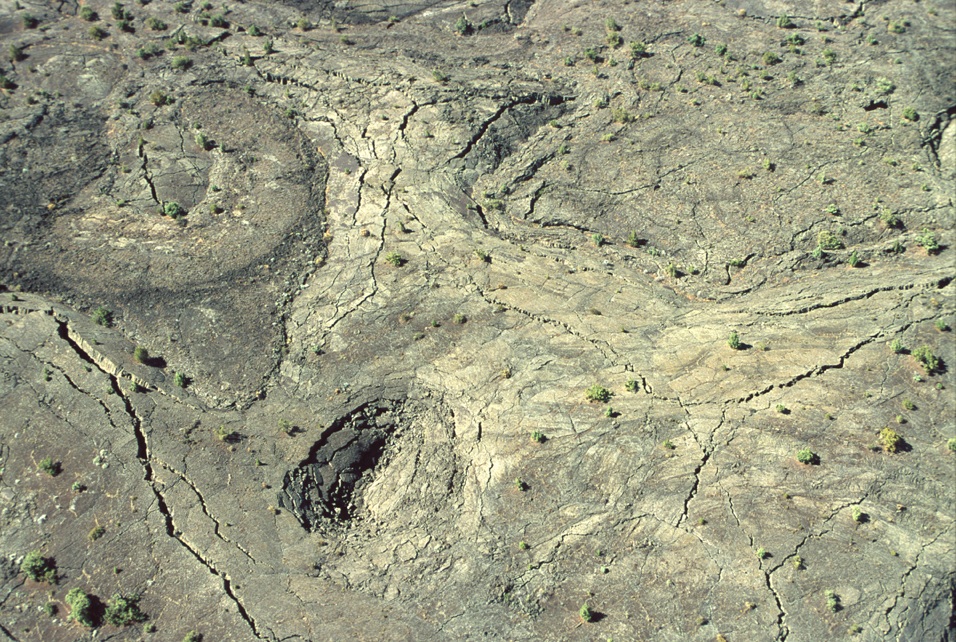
Shoshone Field Office USRD Upper Snake River District